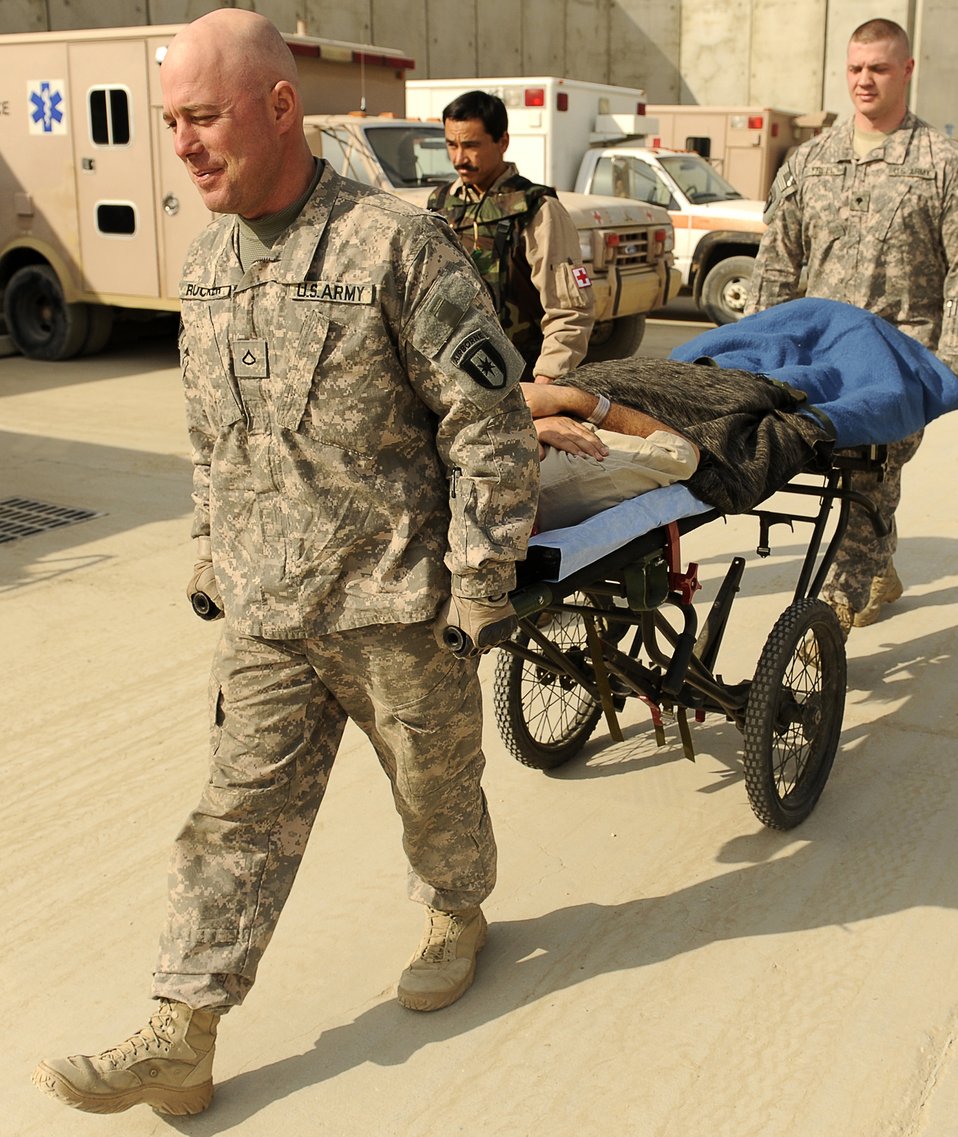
Soldiers and an Afghan airman escort an Afghan soldier on a medical evacuation

Army Pfc. Jeff Rucker (front) Army Spc. Nathan Freel (rear) and Afghanistan National Army Air Corp Sgt. 1st Class Ghulam Sakhi escort an Afghan soldier during a medical evacuation Feb. 3, 2010, at Bagram Airfield, Afghanistan. Sergeant Sakhi is a flight medic with the 438th Air Expeditionary Advisory Group/Combined Air Power Transition Force and Specialists Rucker and Freel are assigned to the 36th Air Support Medical Company.